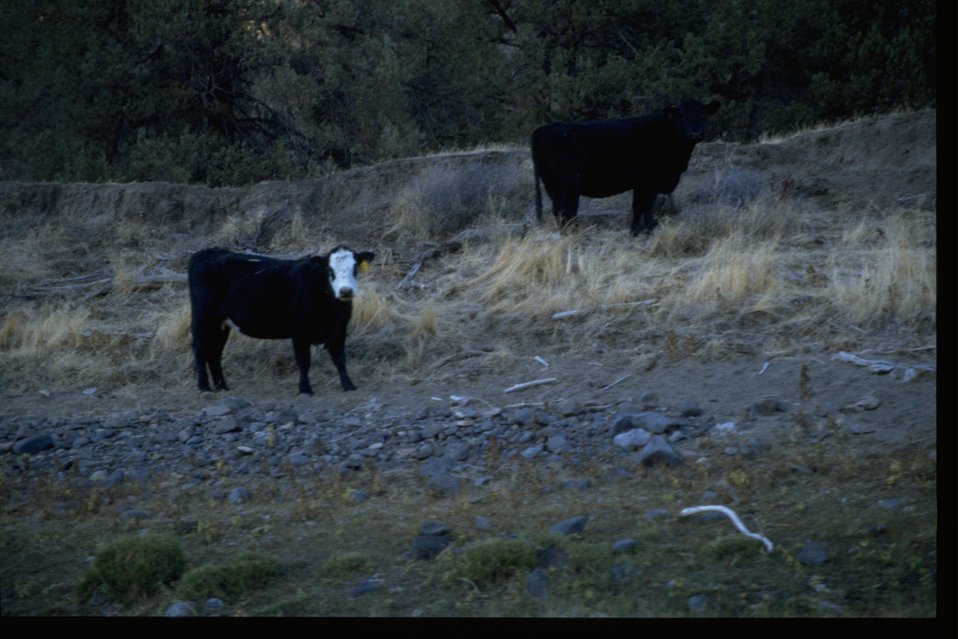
Cows along the John Day River.